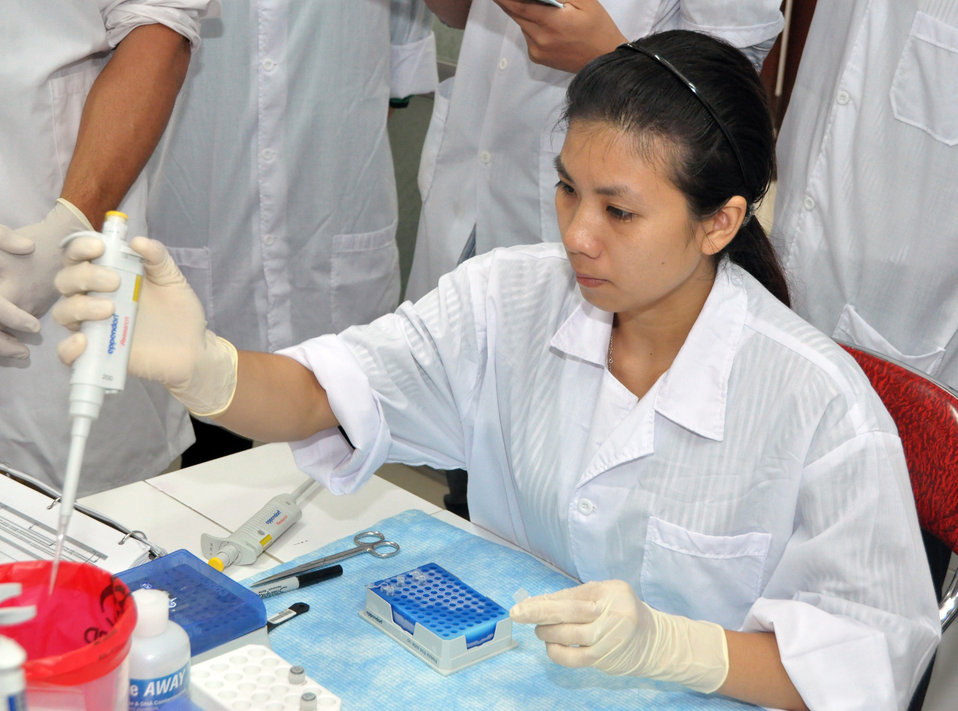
Animal virus detection lab training in Hanoi

Trainee learns how to detect viruses in Hanoi under a USAID program.